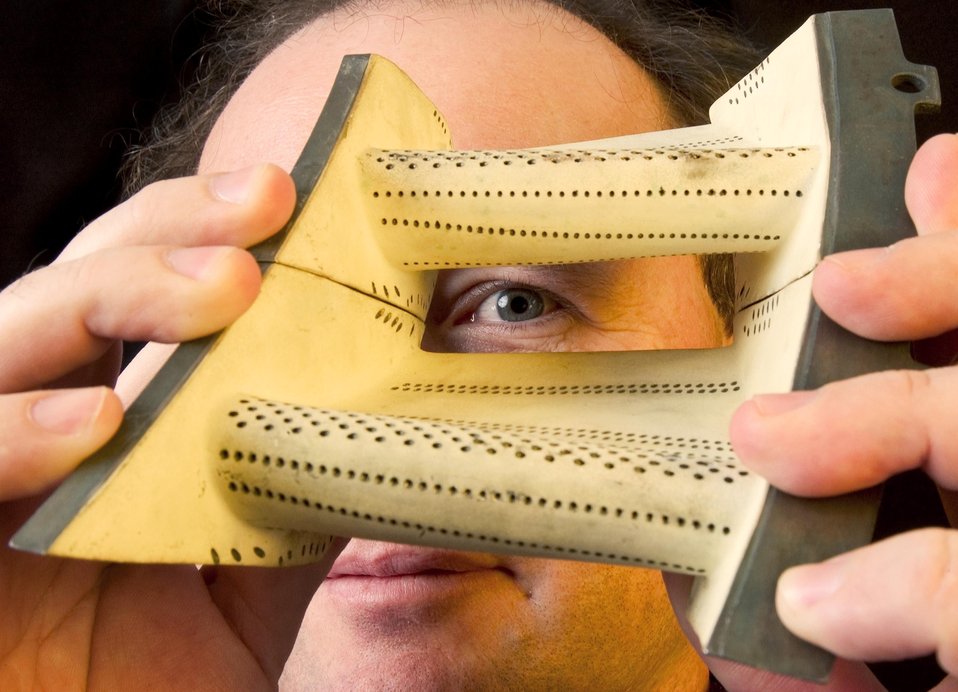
AMES SCIENTIST ARE DEVELOPING A NEW BOND COAT FOR THERMAL BARRIER COATINGS (TBCS) THAT WILL ALLOW ENGINE COMPONENTS, SUCH AS THE TURBINE BLADE SHOWN, OPERATE MORE SUCCESSFULLY IN SEVERE, HIGH TEMPERATURE ENVIRONMENTS.

THE TBCS COULD PROVIDE IMPROVED RELIABILITY AND DURABILITY FOR TURBINE BLADES, MAKING POSSIBLE HIGHER OPERTATING EFFICIENCIES AND EXTENDING ENGINE LIFETIMES. AMES WON A 2005 R&D 100 AWARD. THE R&D 100 AWARDS ARE INDUSTRY-WIDE COMPETITION REWARDING THE PRACTICAL APPLICATIONS OF SCIENCE.